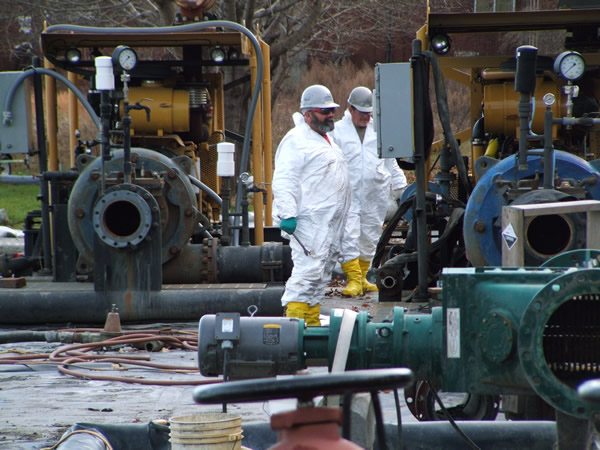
December 2009, Breaking down, or de-mobilizing a booster pump station